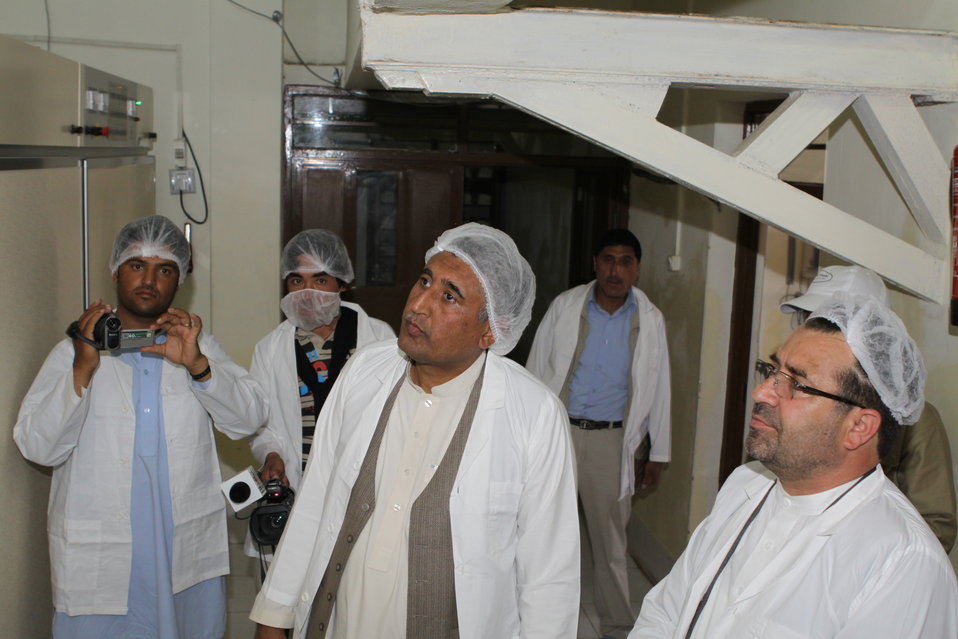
Bolan Poultry Farm